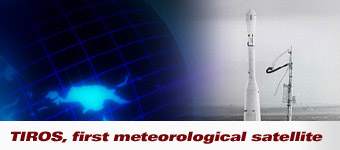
TIROS I

The world's first meteorological satellite launched April 1, 1960, from Cape Canaveral, Fla., atop a Thor missile. The satellite was the Television Infrared Observation Satellite, or TIROS I.